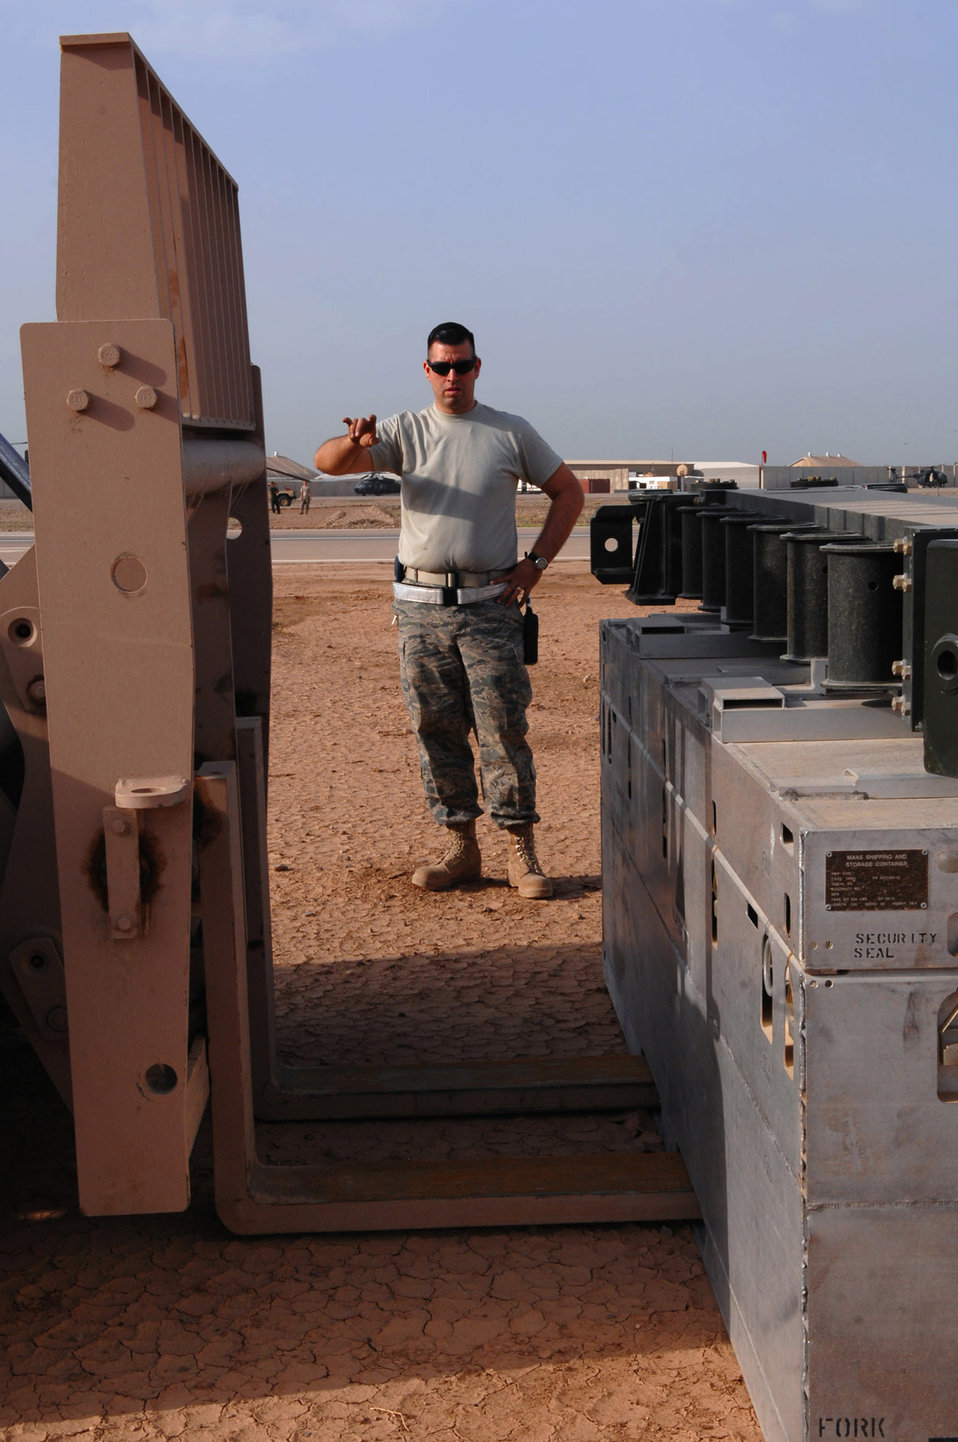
Arresting development

Tech. Sgt. Emmanuel Ramirez guides a forklift to pick up a new arresting barrier system March 12 at Balad Air Base, Iraq. An ABS is a cable stretched across the runway; pilots drop a hook from the back of fighter aircraft and catch it during emergency landings. Sergeant Ramirez is a 332nd Expeditionary Civil Engineer Squadron power production technician deployed form Peterson Air Force Base, Colo.